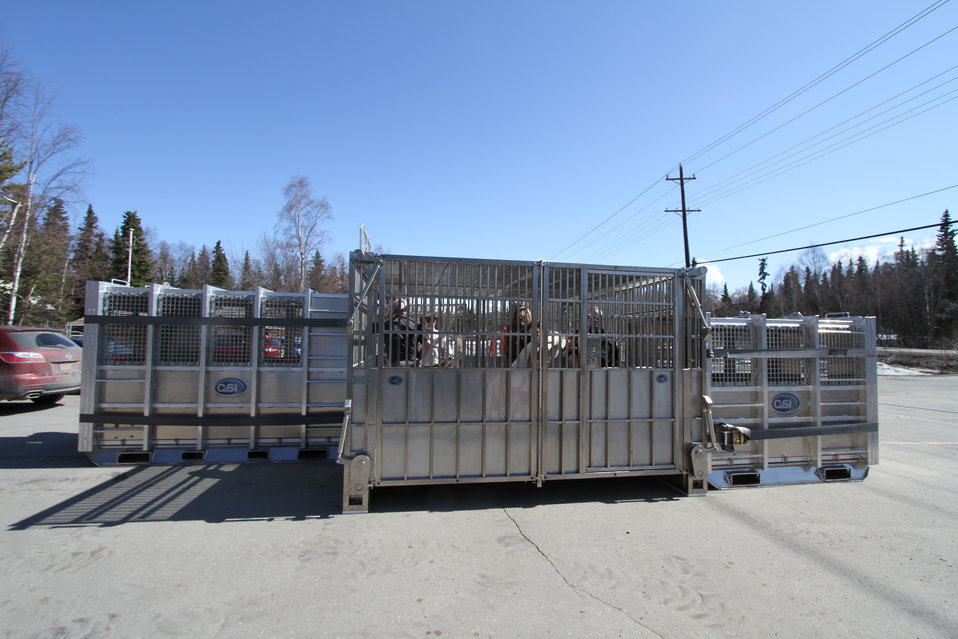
Polar bear holding module being set up at the Alaska Zoo before being shipped north. USFWS/Katrina Mueller